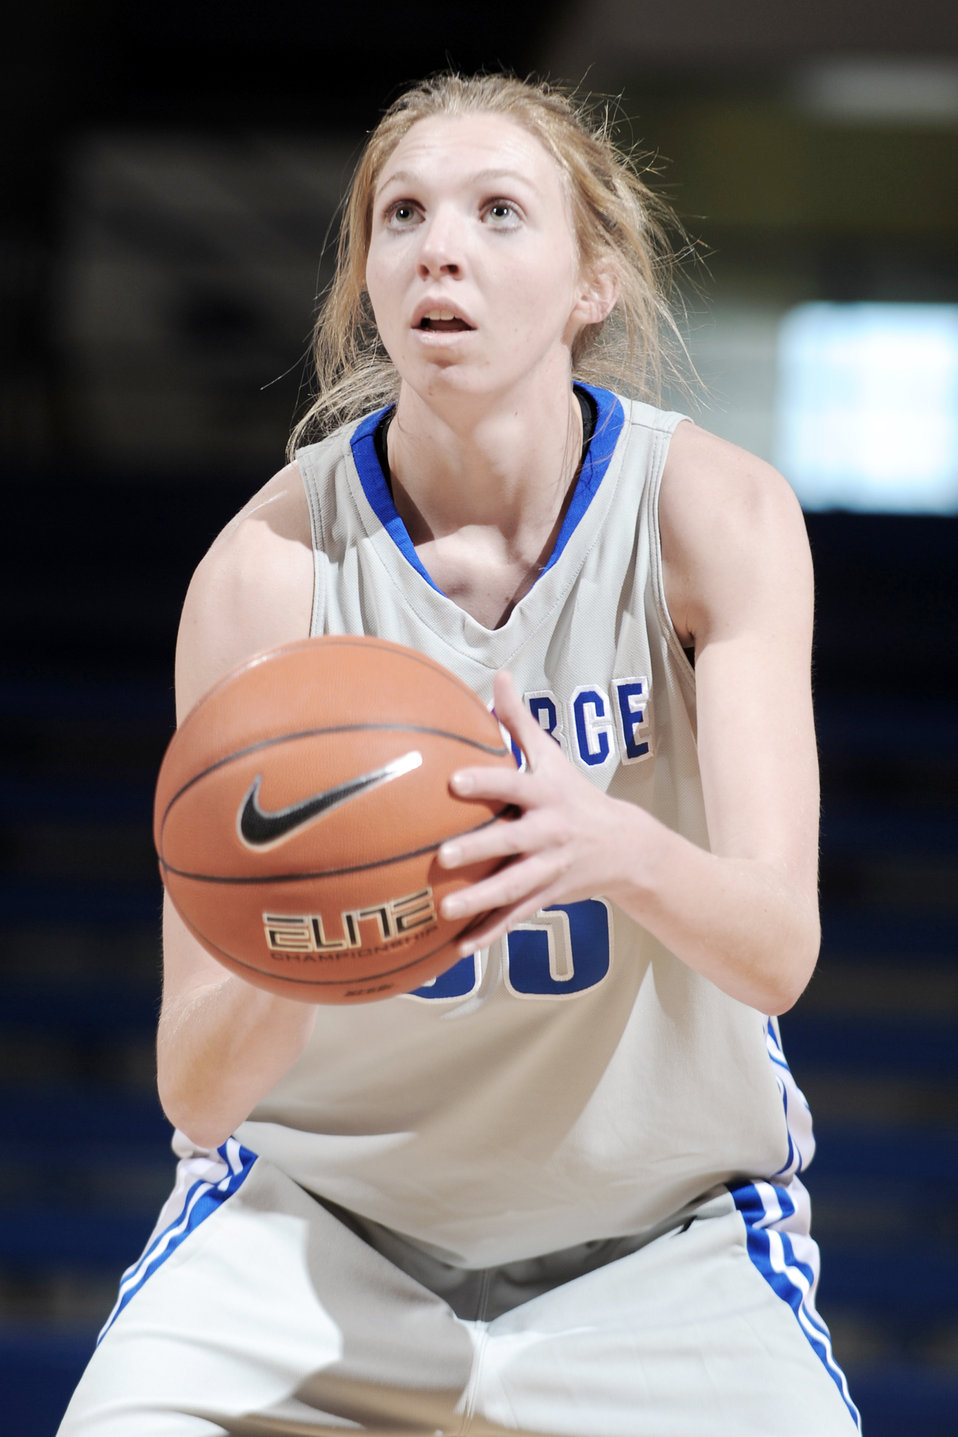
Women's basketball: Bradley University runs past Air Force

Falcon senior forward Kathleen Schjodt starts her free throw after being fouled during the U.S. Air Force Academy game against Bradley University at the Academy's Clune Arena Dec. 19, 2009. Air Force lost the game 62-45.